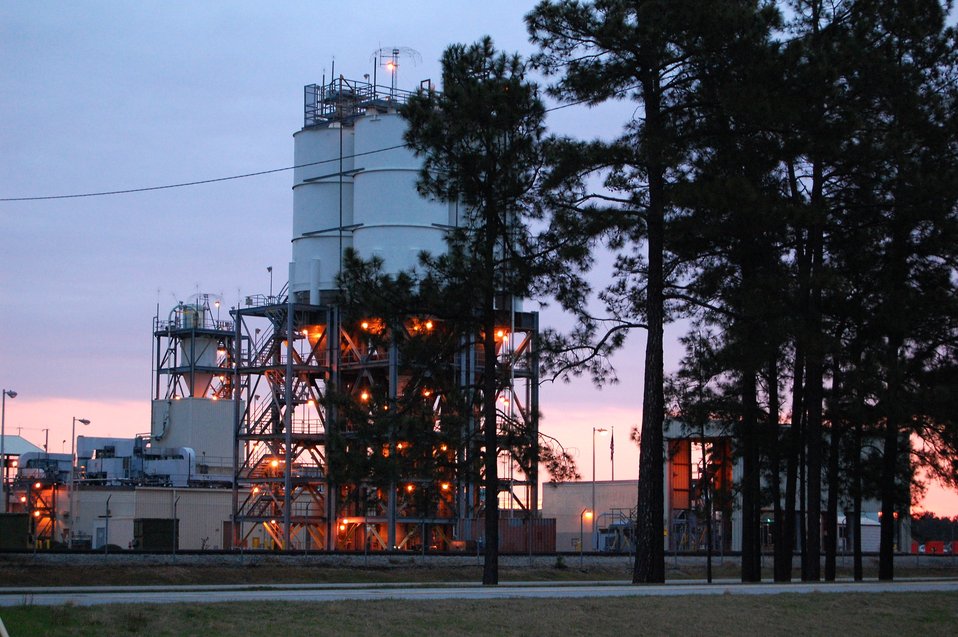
SRS Saltstone facilities

The Saltstone facilities recently surpassed a major milestone by processing 10 million gallons of low-radioactive salt waste since beginning operations on June 12, 1990, at the Savannah River Site. During fiscal year 2011, Saltstone processed nearly 1.5 million gallons of salt waste, surpassing a previous record.